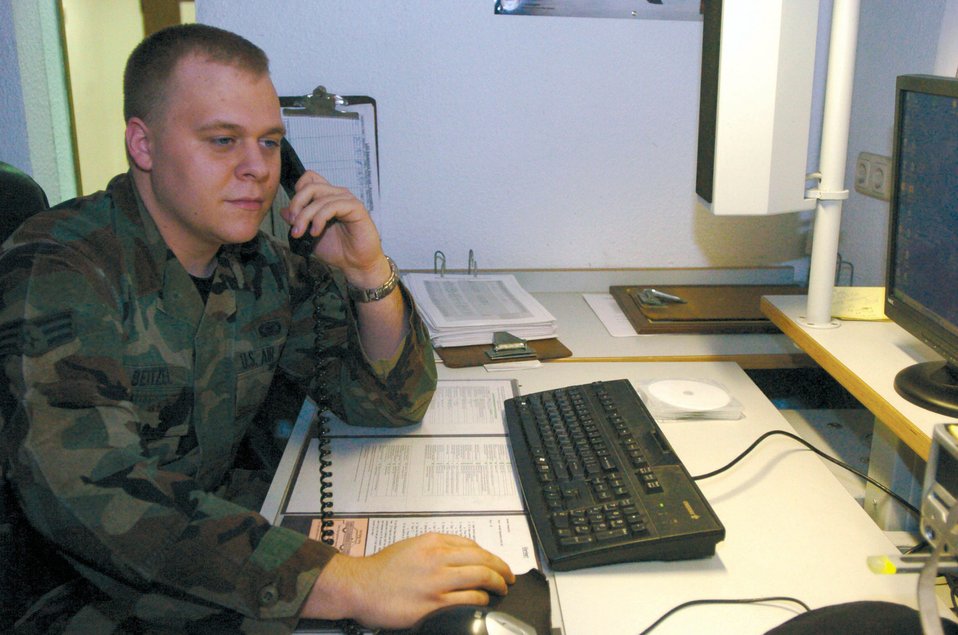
Security forces Airmen maintain ops tempo

SPANGDAHLEM AIR BASE, Germany (AFPN) -- Senior Airman Tony Beitzel answers a law enforcement desk call during his shift Jan. 24. Airman Beitzel said the hardest part of his job is trying to get errands done during the day. He is a controller assigned to the 52nd Security Forces Squadron.